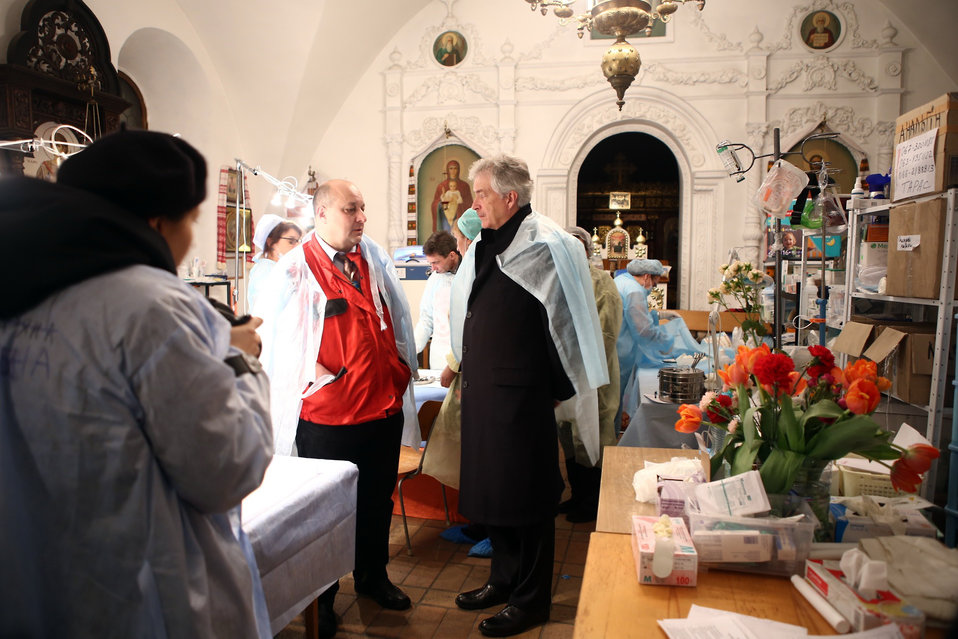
Deputy Secretary Burns Meets With Maidan Medics at St. Michael's Cathedral

Deputy Secretary of State Bill Burns visits St. Michael’s Cathedral, where he meets with Maidan medics, civil society representatives, and religious leaders in Kyiv, Ukraine, on February 25, 2014.